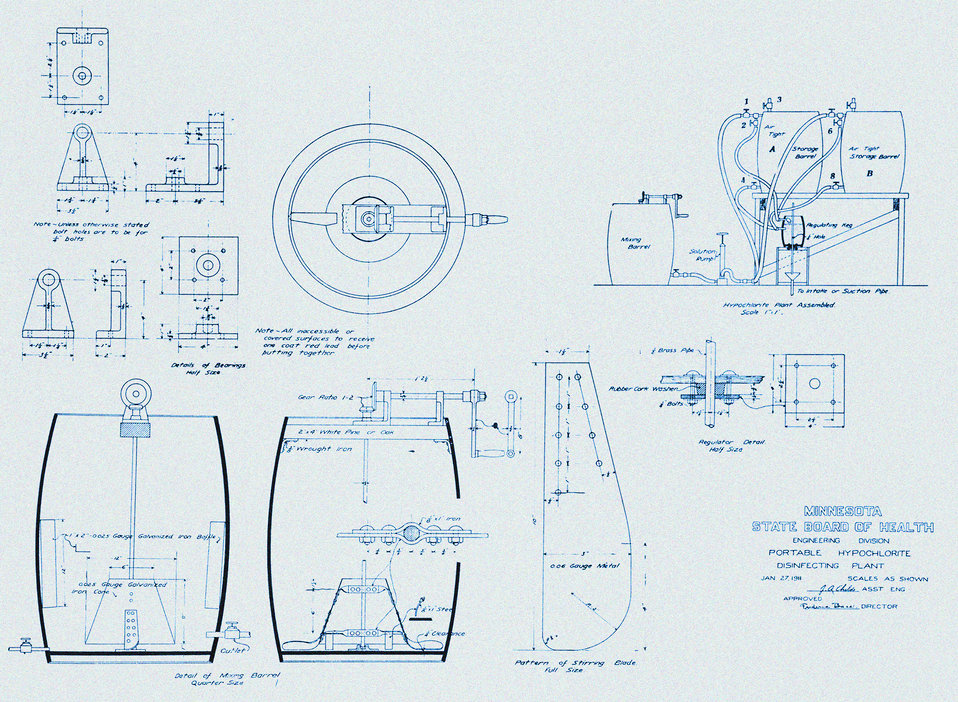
This historic diagram, which had been digitally enhanced and colorized, depicted a 1910 portable emergency hypochlorite water purification device used by the Minnesota State Board of Health, Division of Sanitation. This was one of a series of instructional drawings used by the Minnesota Board of Health to train the state's public health workers.